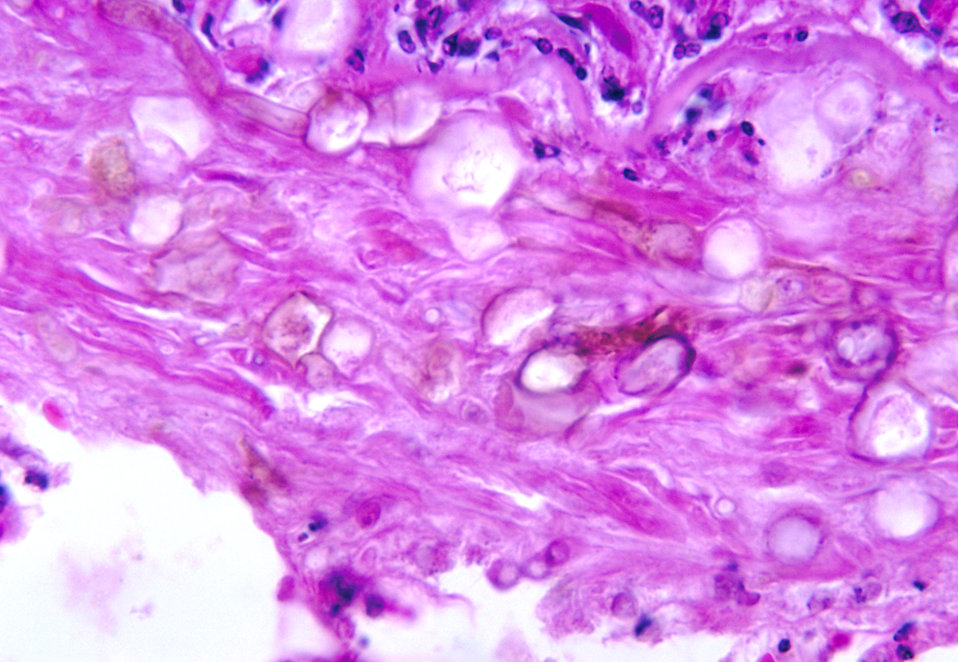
This micrograph depicts the histopathologic changes seen in phaeohyphomycosis due to Bipolaris hawaiiensis.